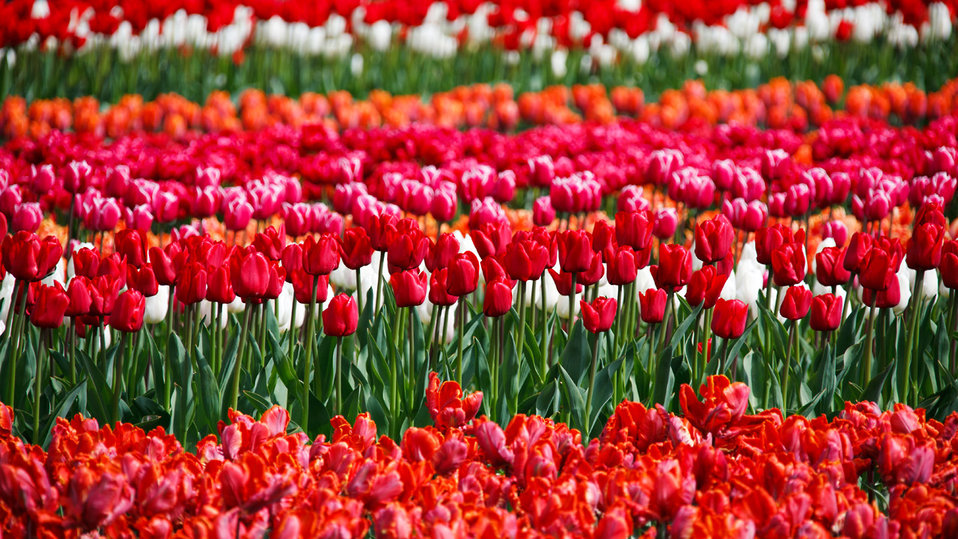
Red tulips

Colorful red, pink and orange tulips in keukenhof gardens.